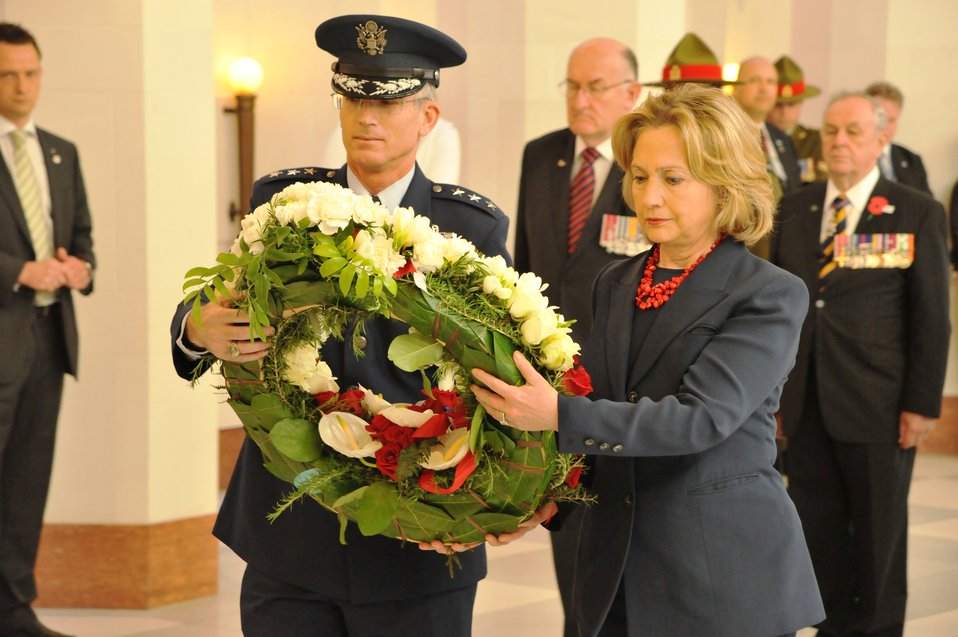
Secretary Clinton and Rear Admiral Ledson ONZM RNZN Rtd Lay a Wreath

U.S. Secretary of State Hillary Rodham Clinton and Rear Admiral David Ledson ONZM RNZN rtd lay a wreath at the National War Memorial in Wellington, New Zealand, on November 5, 2010.